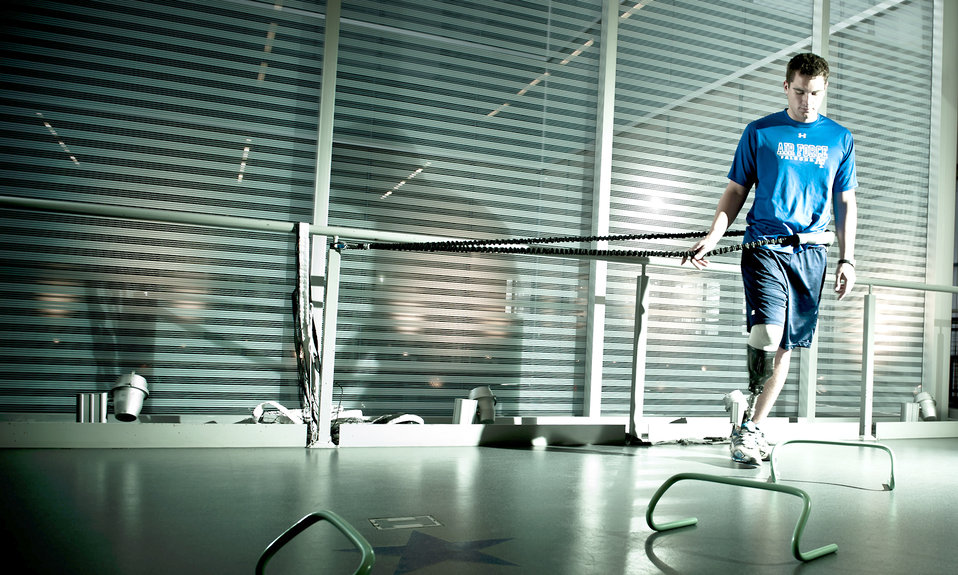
1st Lt Ryan McGuire

1st Lt. Ryan McGuire uses a bungee cord to force him to shift his weight to his prosthesis as part of his physical therapy session May 25, 2010, at the Center for the Intrepid in San Antonio.